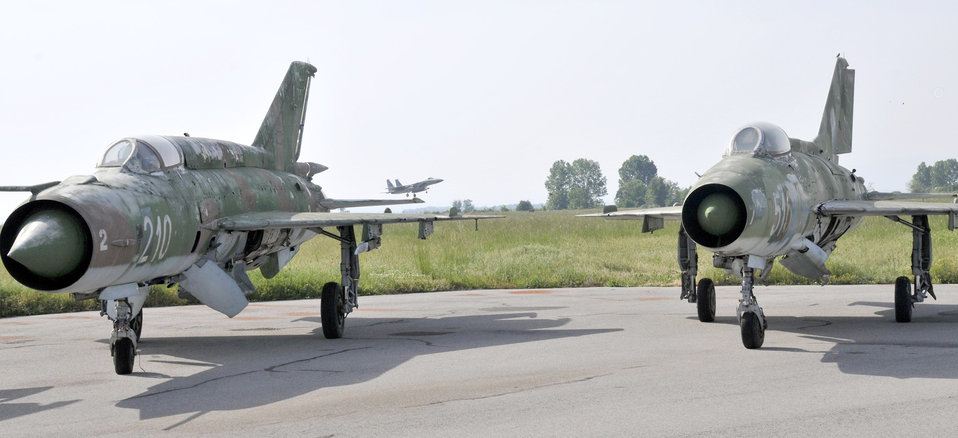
U.S. and Bulgarian airmen train together

Two MiG-21s sit on the tarmac as an F-15 Eagle pilot lands May 13, 2010, at Graf Ignatievo Air Force Base in Plovdiv, Bulgaria. Airmen from the 48th Fighter Wing are in Bulgaria taking part in Sentry Gold, an exercise developed to familiarize U.S. pilots with the MiG airframes, build partnerships with the Bulgarian air force and assist them in their continued integration into NATO operations. The F-15 is from the 493rd Fighter Squadron at RAF Lakenheath, England.